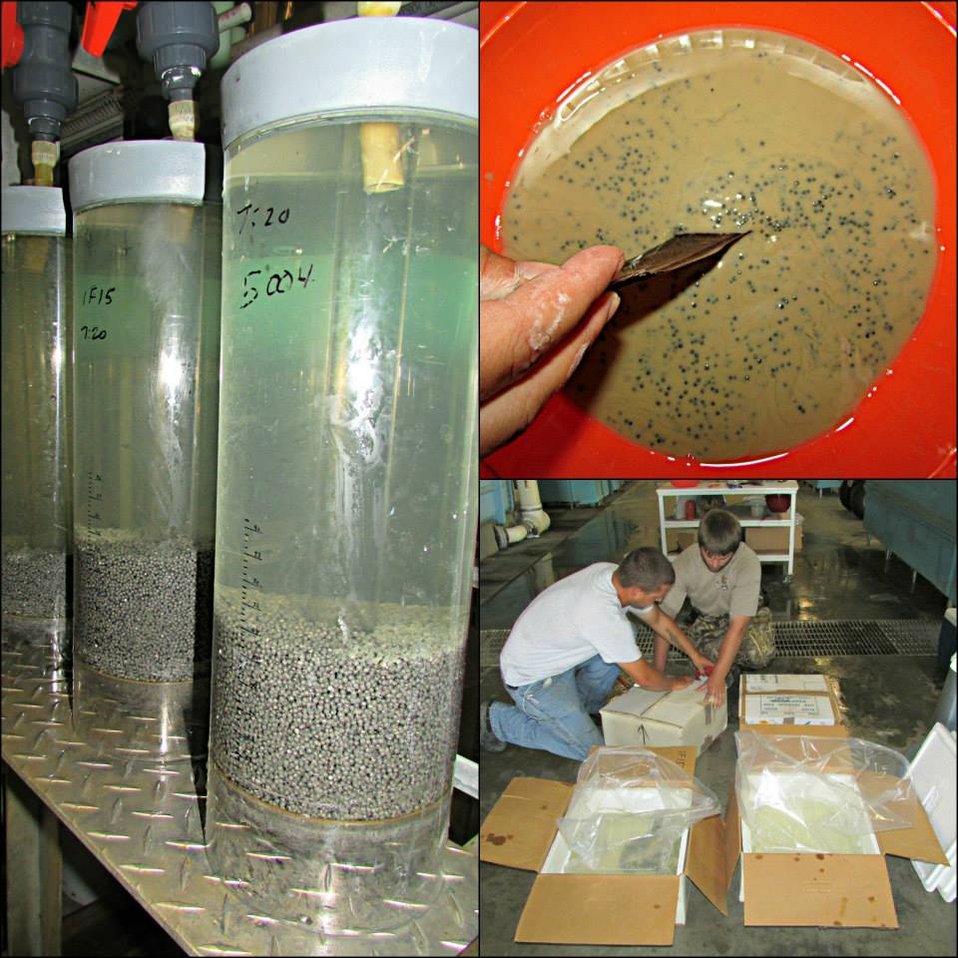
Miles City Spawn

Pallid sturgeon spawning wasn't over quite yet!

Early July we were at the Miles City State Fish Hatchery in Montana to spawn some incredible fish. These wild pallid sturgeon were estimated to be over 50 years old and about 40 lbs. They were captured (and eventually will be re-released) in different parts of the Missouri and Yellowstone River. We came home with about 15,000 eggs with the rest heading to Garrison Dam National Fish Hatchery.

The picture on the left shows the eggs rolling in a hatching jar. The top right picture shows how we fertilize the eggs, taken minutes after harvesting them from the fish. The bottom right picture shows how we ship the eggs, with lots of tape, Styrofoam and ice.